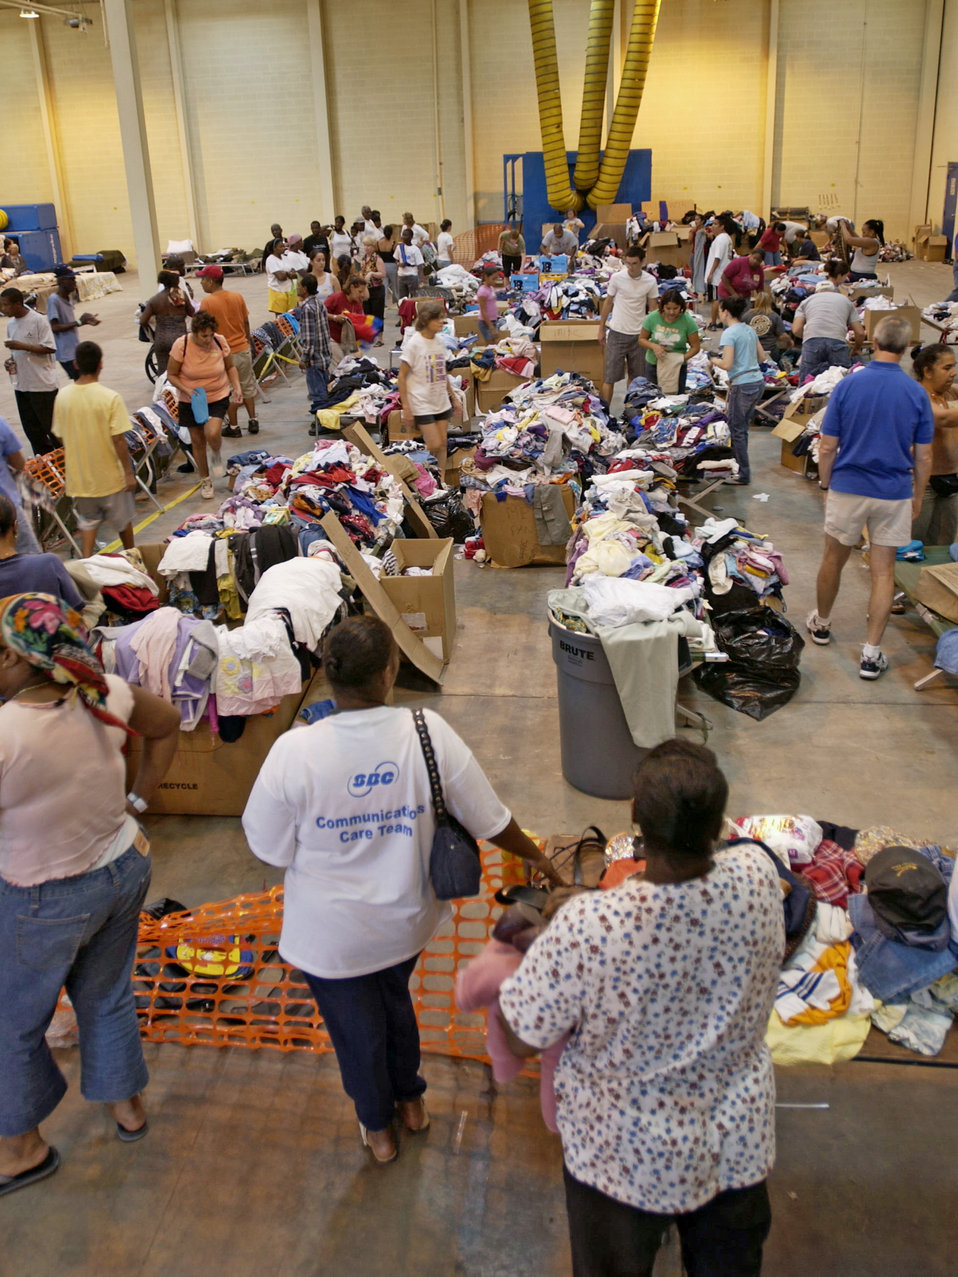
Hurricane relief

SAN ANTONIO - Gulf Coast evacuees sort through donated items here. The evacuees were inprocessed, given a medical checkup, fed and provided donated clothing and other personal needs.